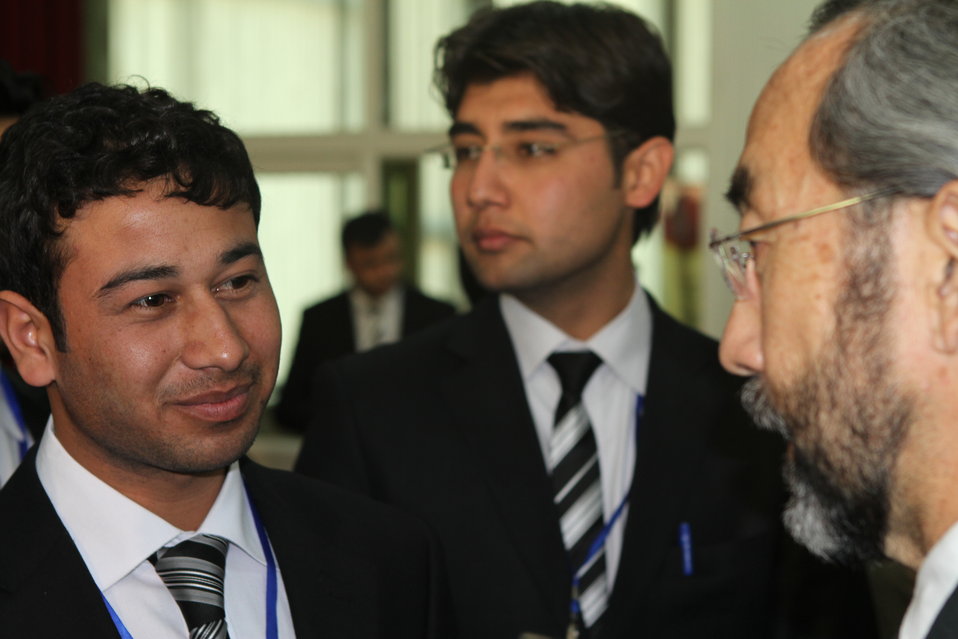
Connecting

Ken Yamashita, Mission Director, USAID, talks with students from Balkh University during the recess at the Jessup Moot Court, January 11, 2012